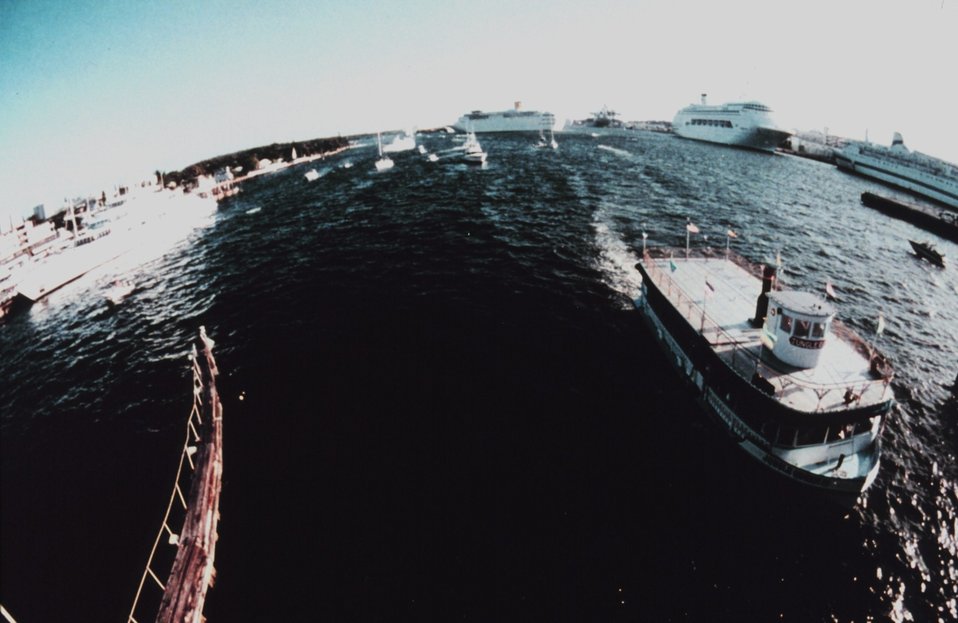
A fisheye view of the cruise ship port at Port Everglades